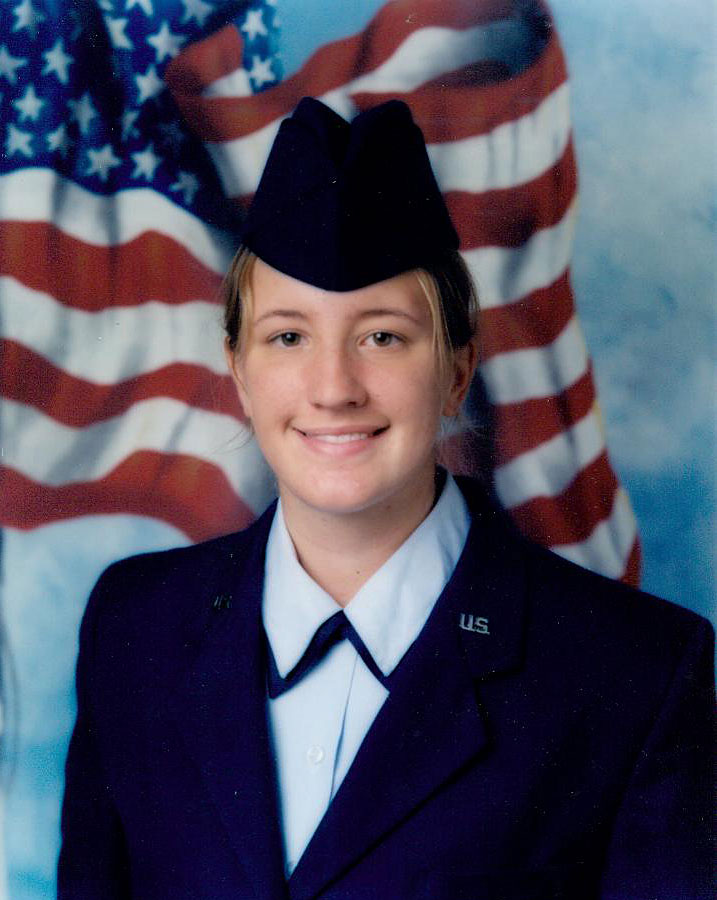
Karie Reishus served in the U.S. Air Force from 1998 to 2002 and was stationed at Schriever AFB, Colorado. She is now an Accountant in the Midwest Region’s Department of Budget & Finance.